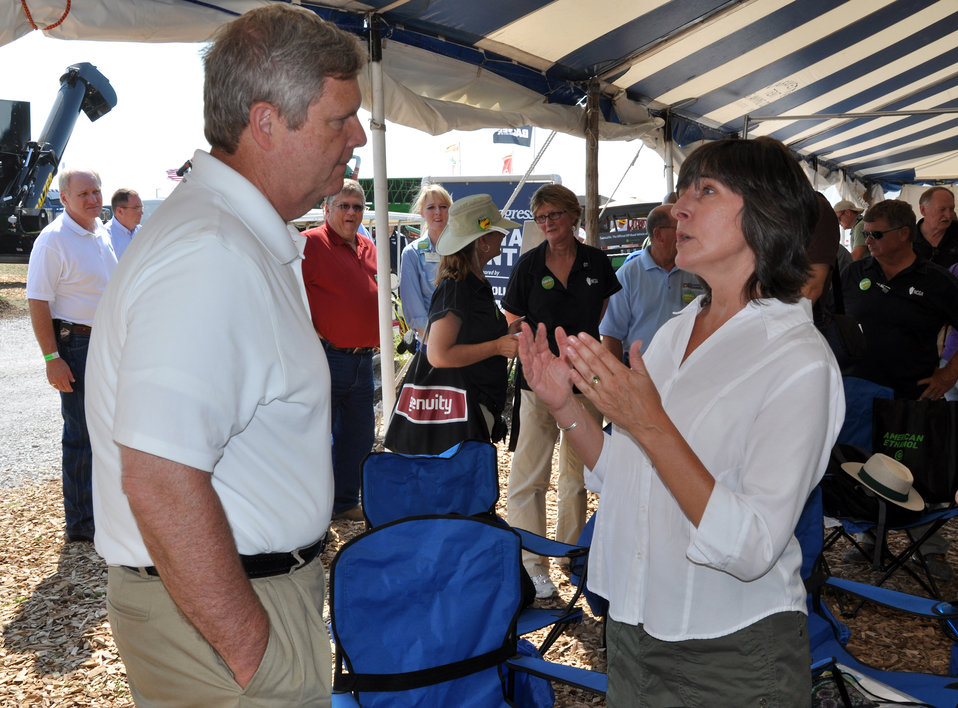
Women, Food Agriculture Network (WFAN) Executive Director Leigh Adcock speaks with Agriculture Secretary Tom Vilsack prior to meeting the media at the 2012 Farm Progress Show in Boone, Iowa, on Aug. 30, 2012.